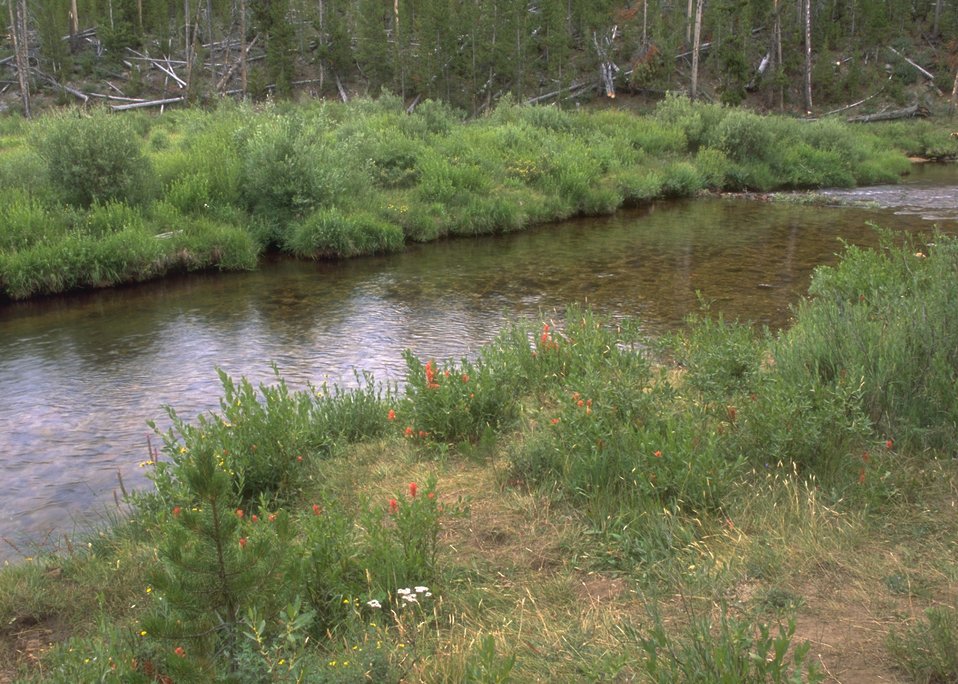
Landscape at Sweetwater Campground, Rock Springs Field Office.